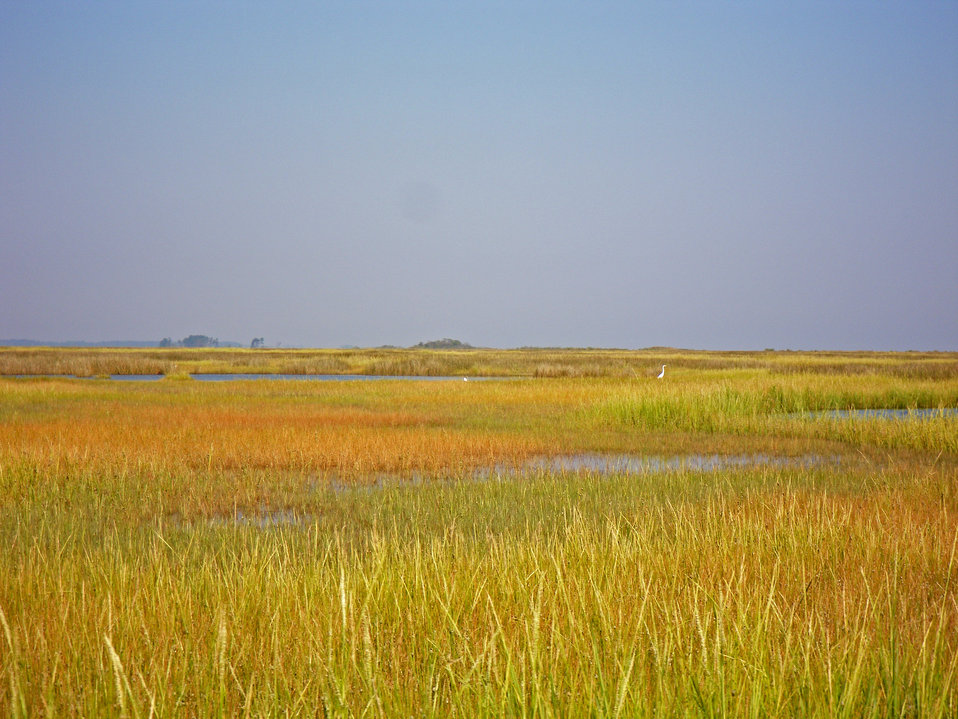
Salt marsh

Plum Tree Island National Wildlife Refuge, VA.